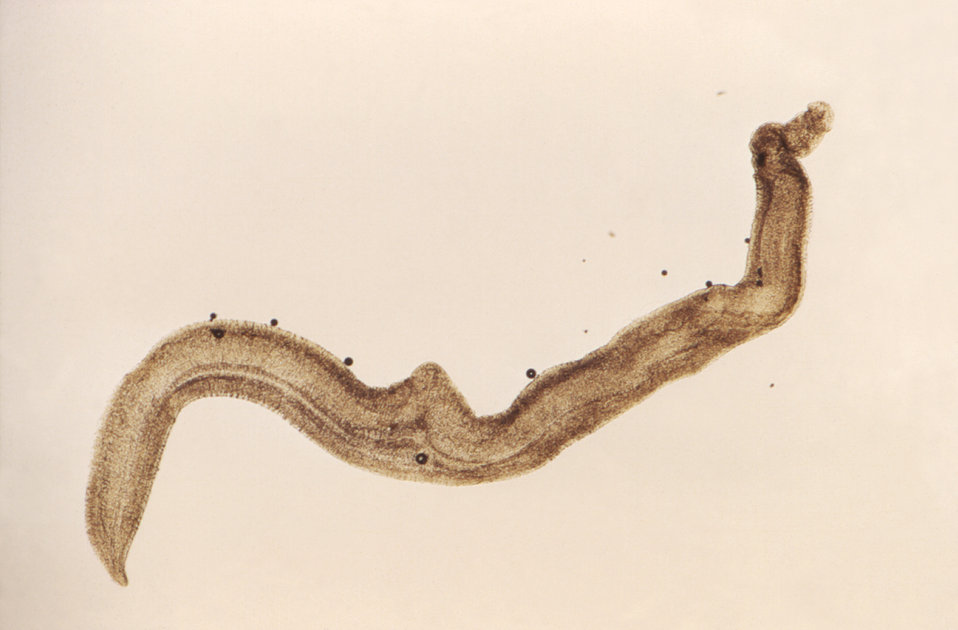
This magnified view reveals a male Schistosoma mansoni trematode. Take a look at PHIL 11193, which depicts a mating pair of worms, where the thinner female is cradled inside the thicker male worm's gynecophoral canal.